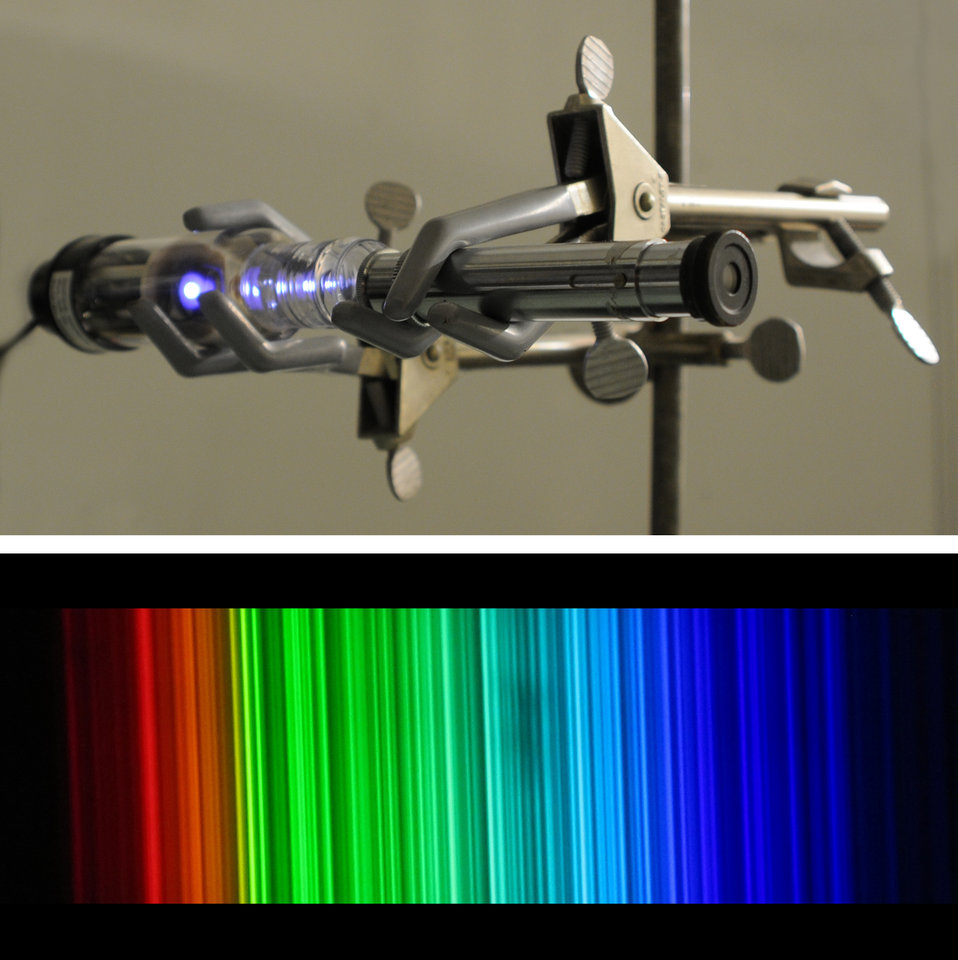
Thorium Emission Lamp

A thorium emission lamp's violet glow, when viewed through a spectroscope (metal tube on right in top image), is split into a spectrum of thousands of bright lines (bottom image). New measurements of these lines could help astronomers search for earthlike planets around distant stars.